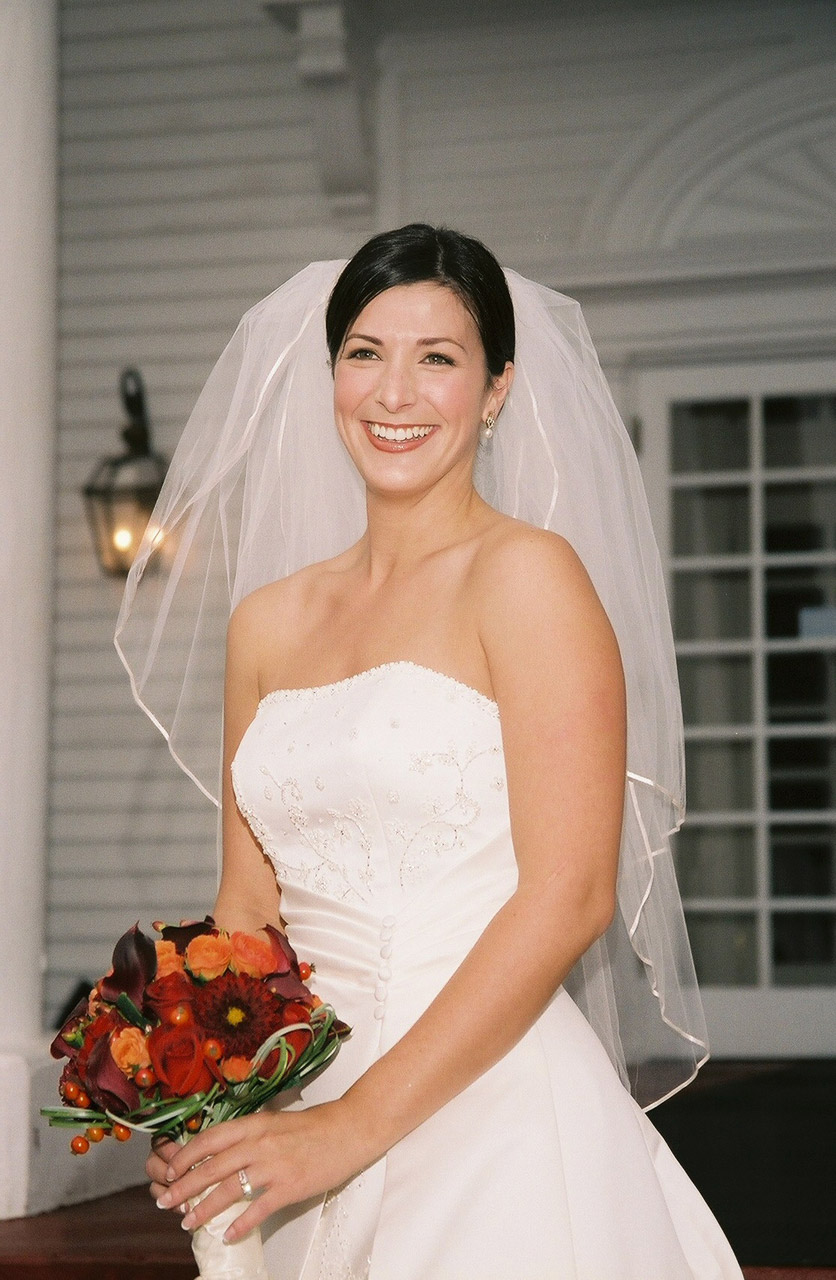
Bride black and white

Beautiful bride.